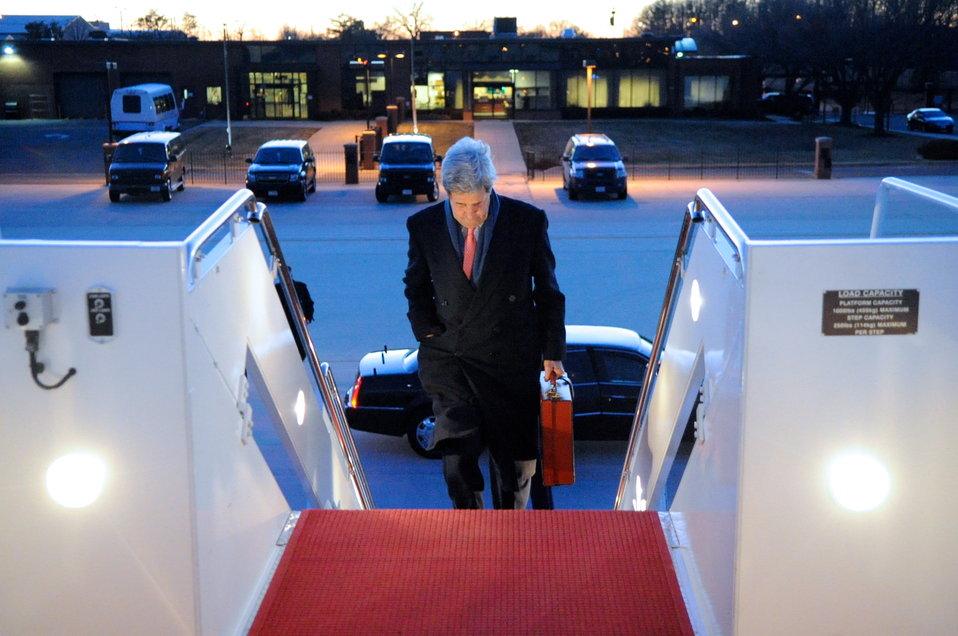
Secretary Kerry Departs for London Meeting With Russian Foreign Minister Lavrov

U.S. Secretary of State John Kerry boards his aircraft at Andrews Air Force Base in suburban Washington on March 13, 2014, for an overnight flight to London, United Kingdom, for a meeting with Russian Foreign Minister Sergey Lavrov and a discussion focused on Ukraine and Crimea.